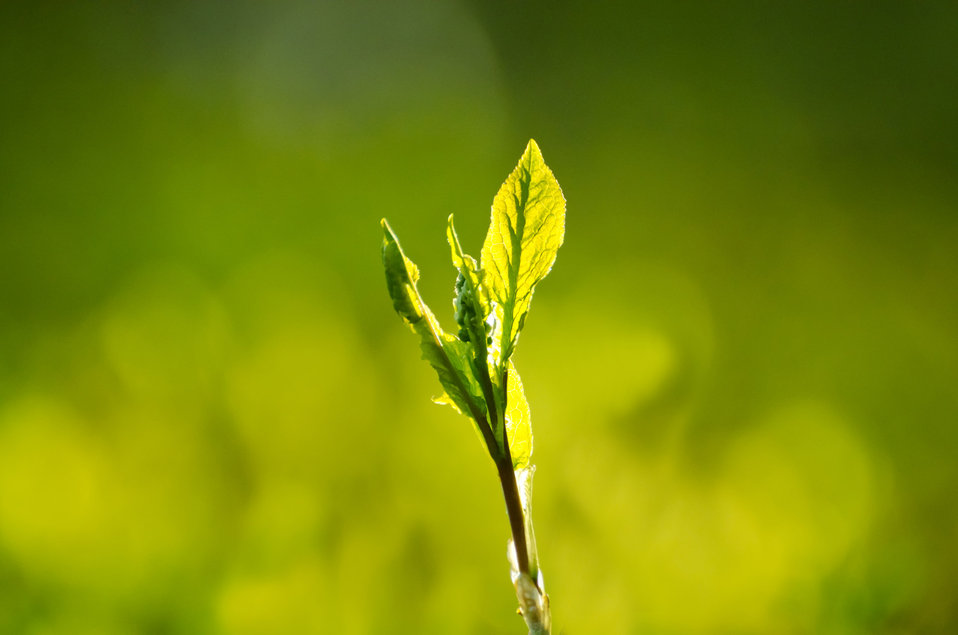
Green leaves on the green background.